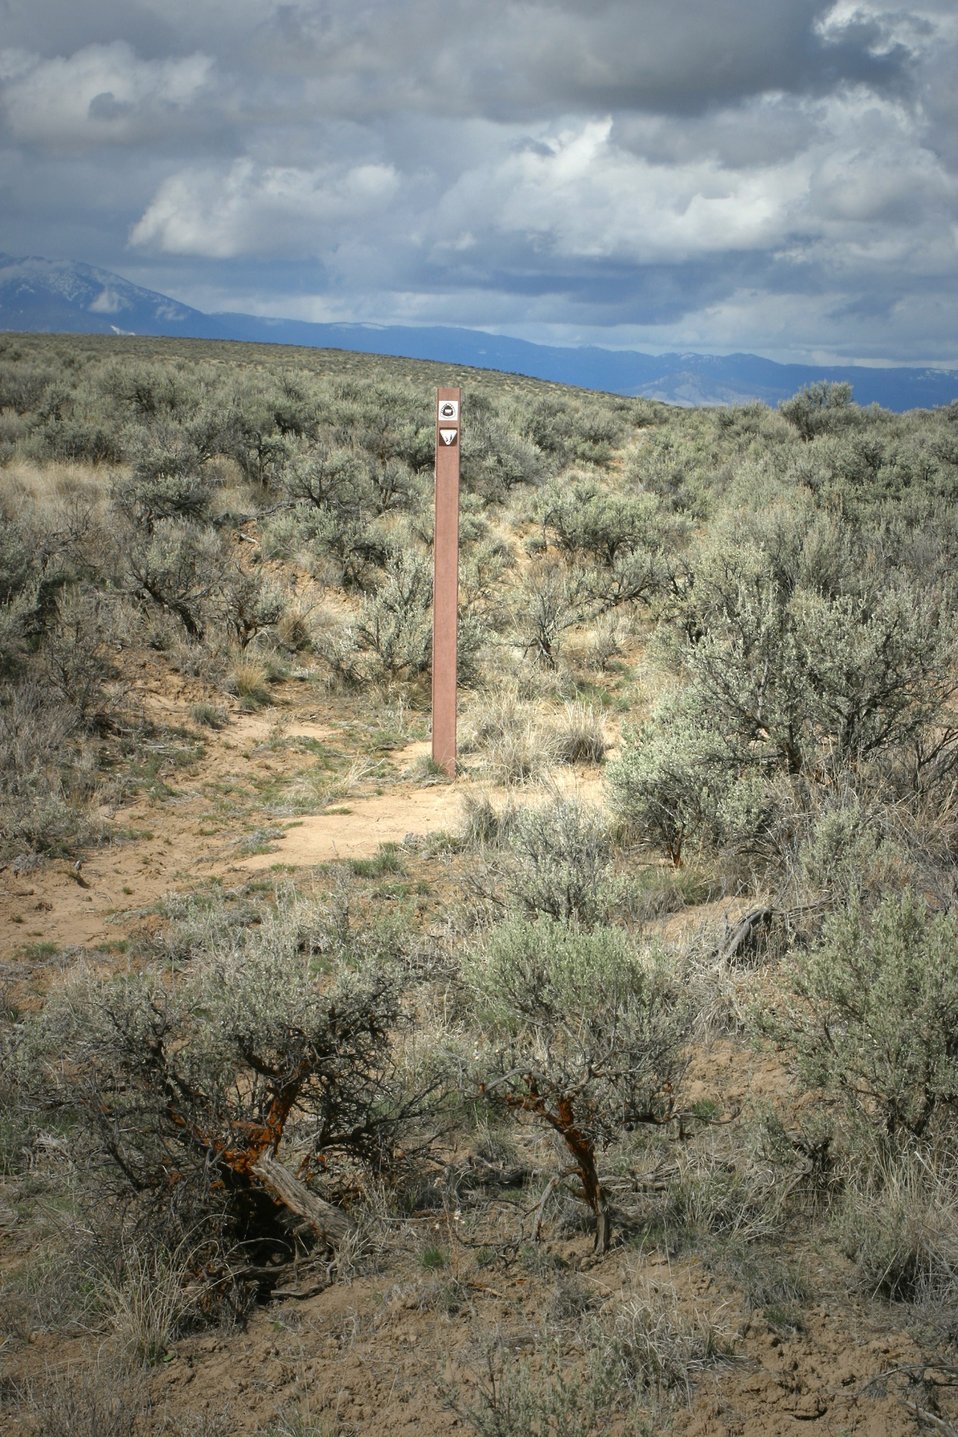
Oregon Trail ruts below the National Historic Oregon Trail Interpretive Center.